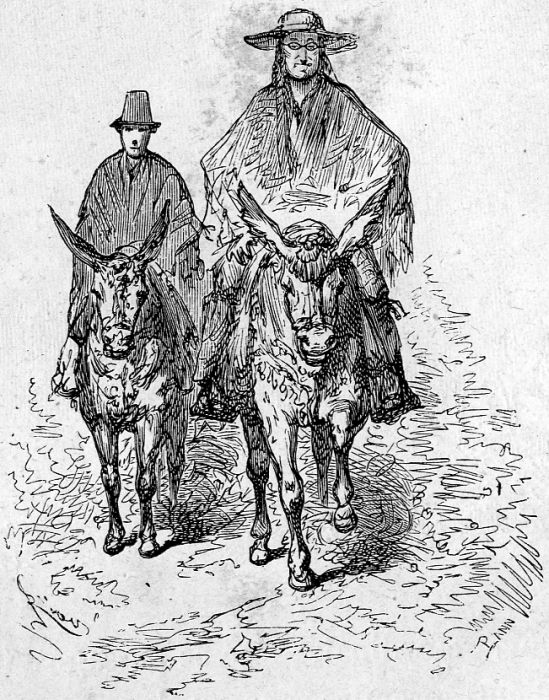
An ilustration from the novel 'In Search of the Castaways; or Captain Grant's Children' by Jules Verne drawn by √âdouard Riou. Polski: Ilustracja powie≈õci Juliusza Verne'a 'Dzieci kapitana Granta' autorstwa √âdouarda Riou. Fran√ßais†: 'Les Enfants du capitaine Grant', √âdouard Riou.